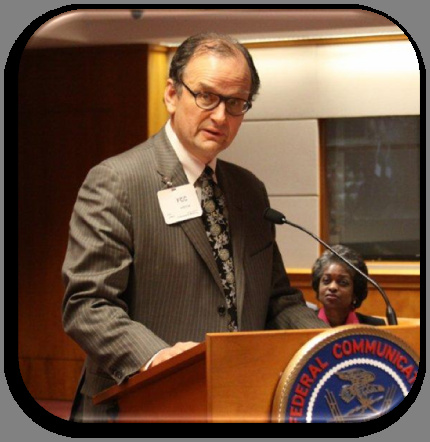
Commissioner Philip B. Jones, Washington State Utilities and Transportation Commission